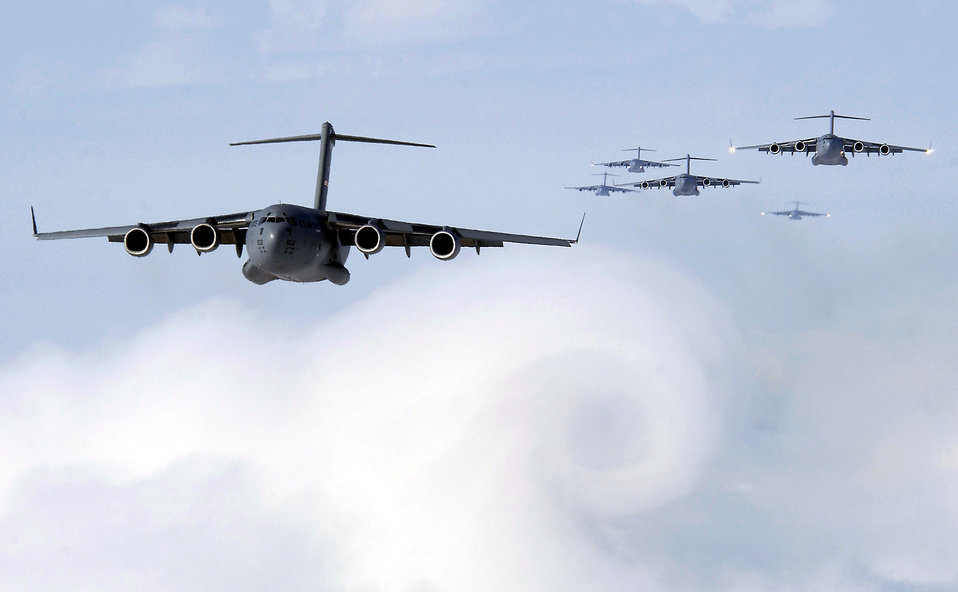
Training Globemasters

OVER SOUTH CAROLINA -- Six C-17 Globemaster IIIs participate in a training airdrop formation July 27. In all, nine C-17s from the 437th Airlift Wing at Charleston Air Force Base, S.C., took part. The scheduled airdrop took place over North Field, S.C.